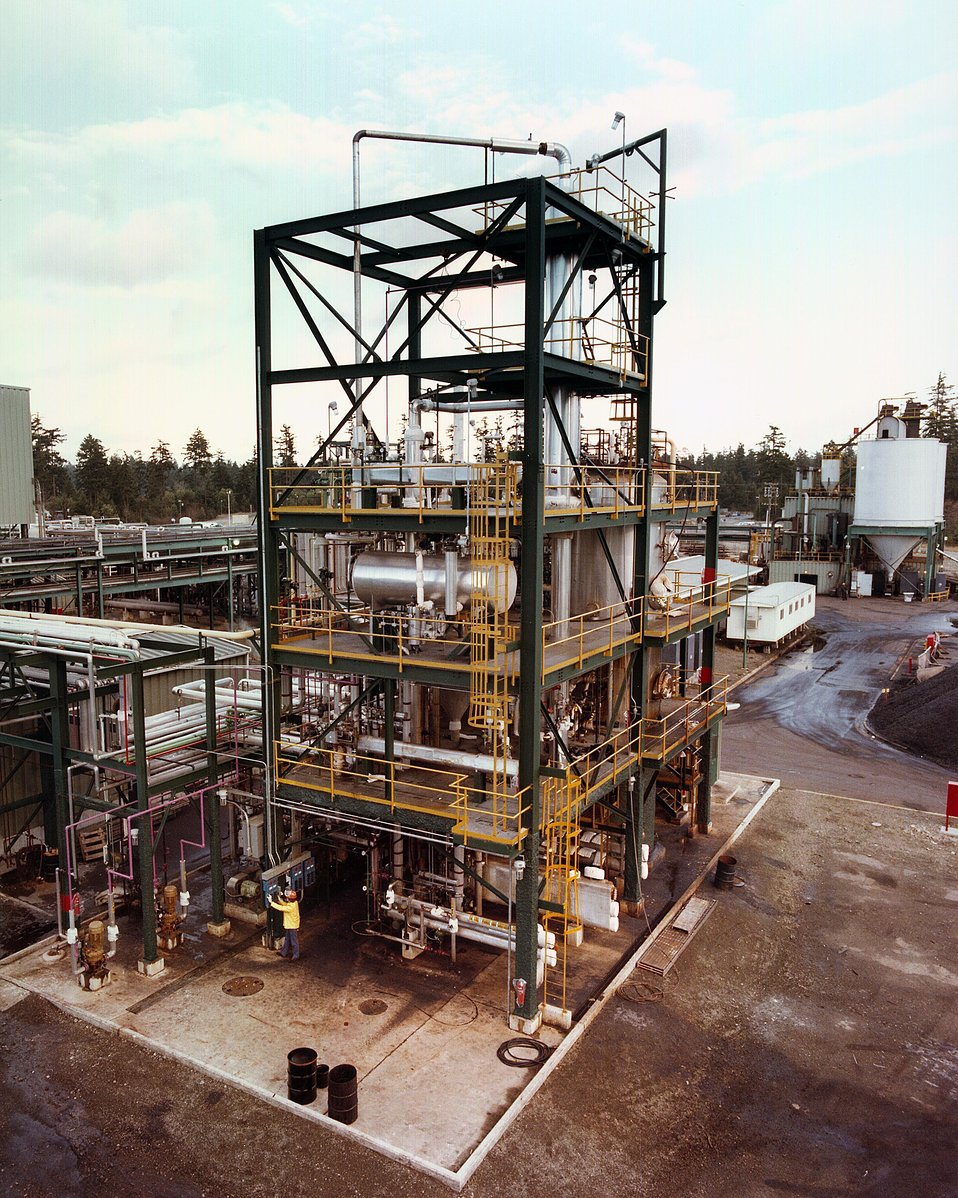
LUMMAS ANTI-SOLVENT DEASHING UNIT FOR SEPARATING ASH FROM THE LIQUEFIED COAL.